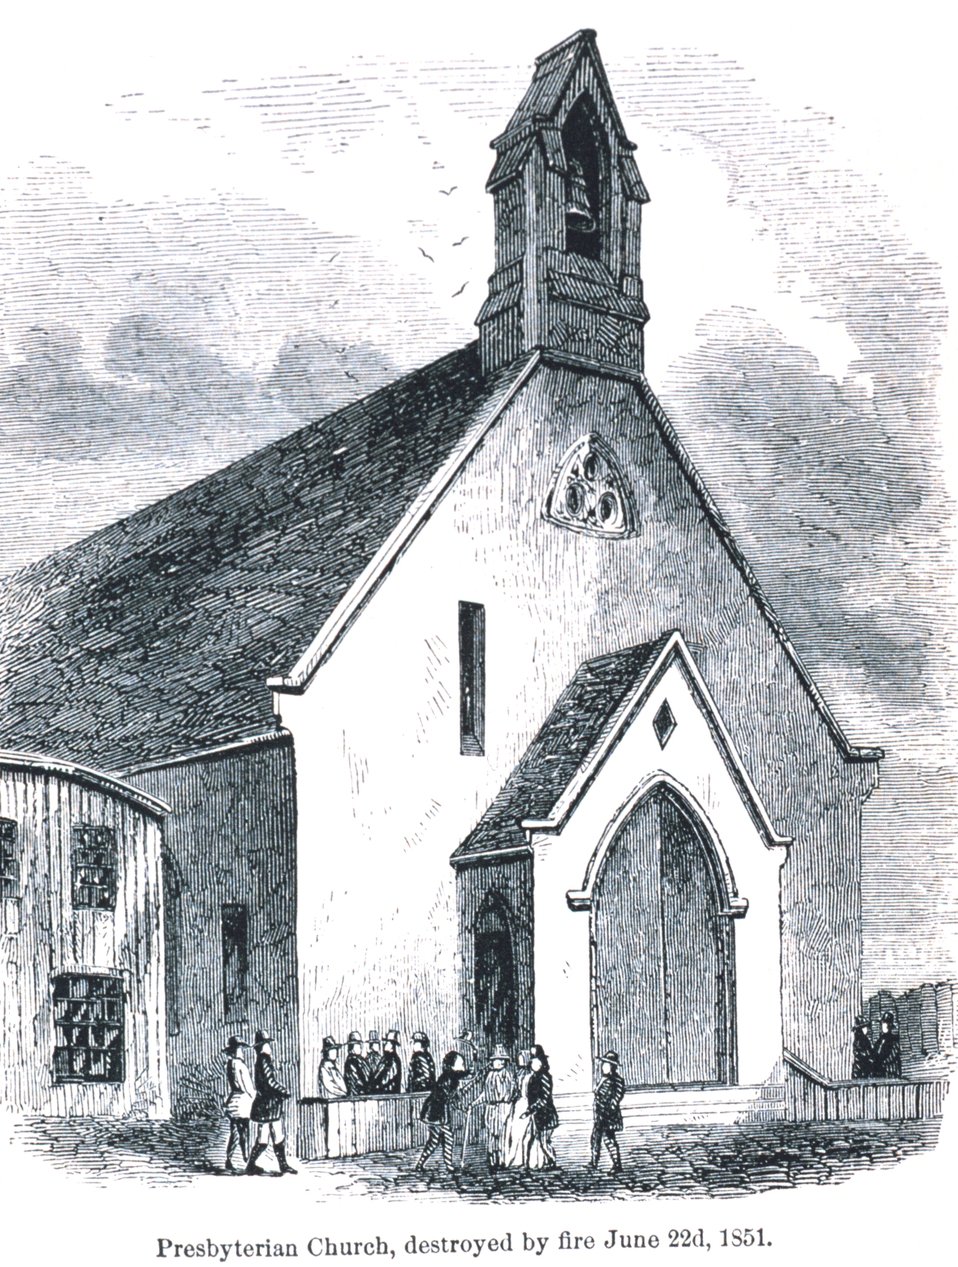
Presbyterian Church destroyed by fire on June 22nd, 1851. In: 'The Annals of San Francisco'. Frank Soule, John Gihon, and James Nesbit. 1855. Page 691. D. Appleton & Company, New York. F869.S3.S7 1855.